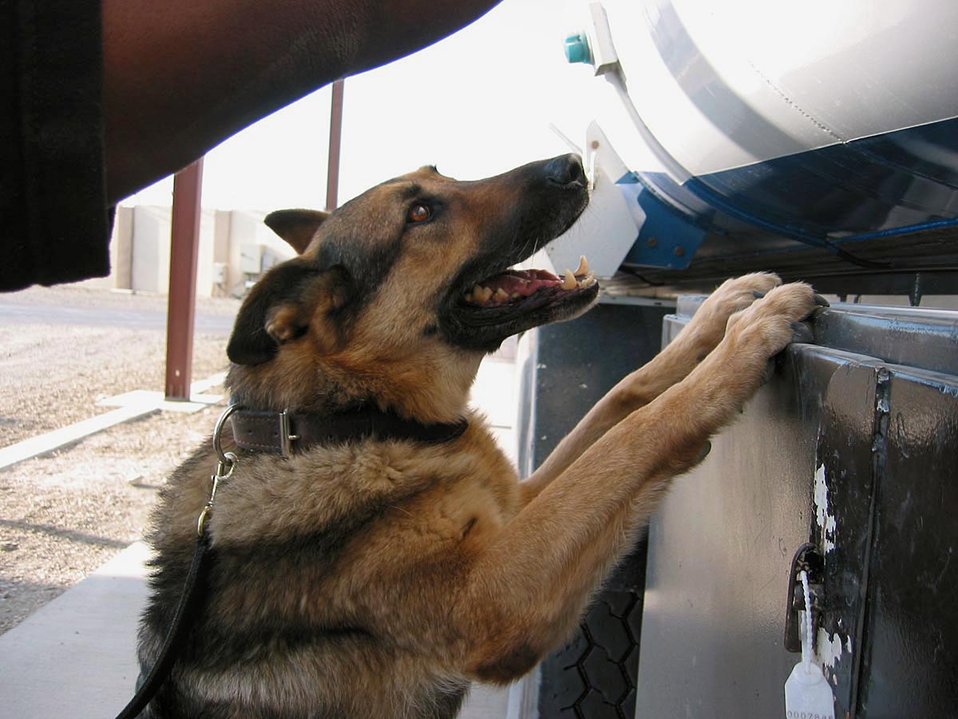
Four defenders work like dogs

OPERATION ENDURING FREEDOM (AFPN) -- Arkie inspects a truck at the vehicle search area at a forward-deployed location. The veteran military working dog with the 380th Expeditionary Security Forces Squadron K-9 patrol, Arkie works with Staff Sgt. Louis Smith.